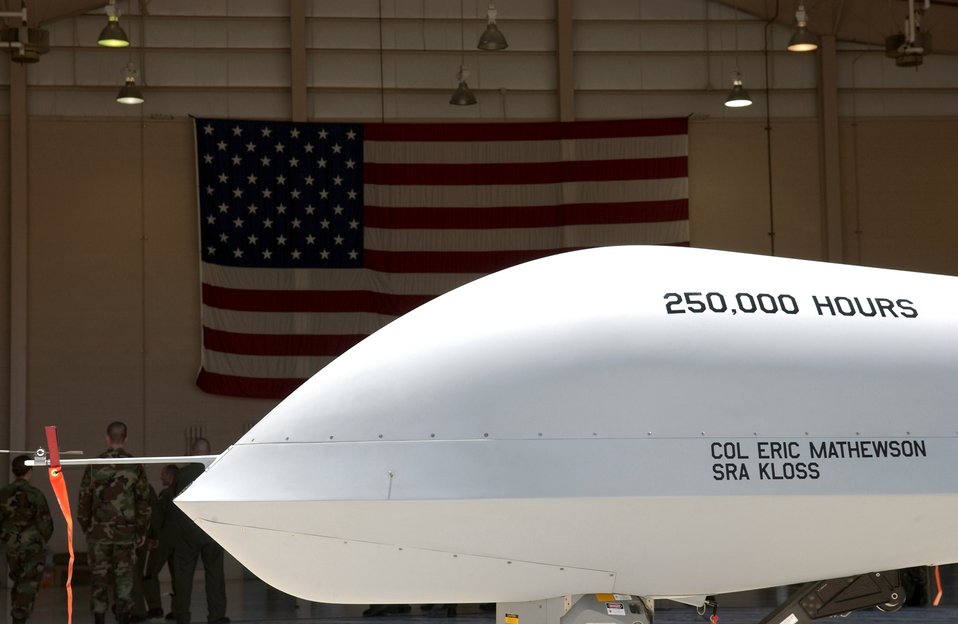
Predators reach quarter-million flight hours

An MQ-1 Predator sits on display after commemorating the 250,000th flight hour June 22 at Creech Air Force Base, Nev. The Predator is assigned to the 11th Reconnaissance Squadron at Creech AFB. The Predator carries the Multi-spectral Targeting System with inherent AGM-114 Hellfire missile targeting capability and integrates electro-optical, infrared, laser designator and laser illuminator into a single sensor package. The aircraft can employ two laser-guided Hellfire anti-tank missiles with the MTS ball.